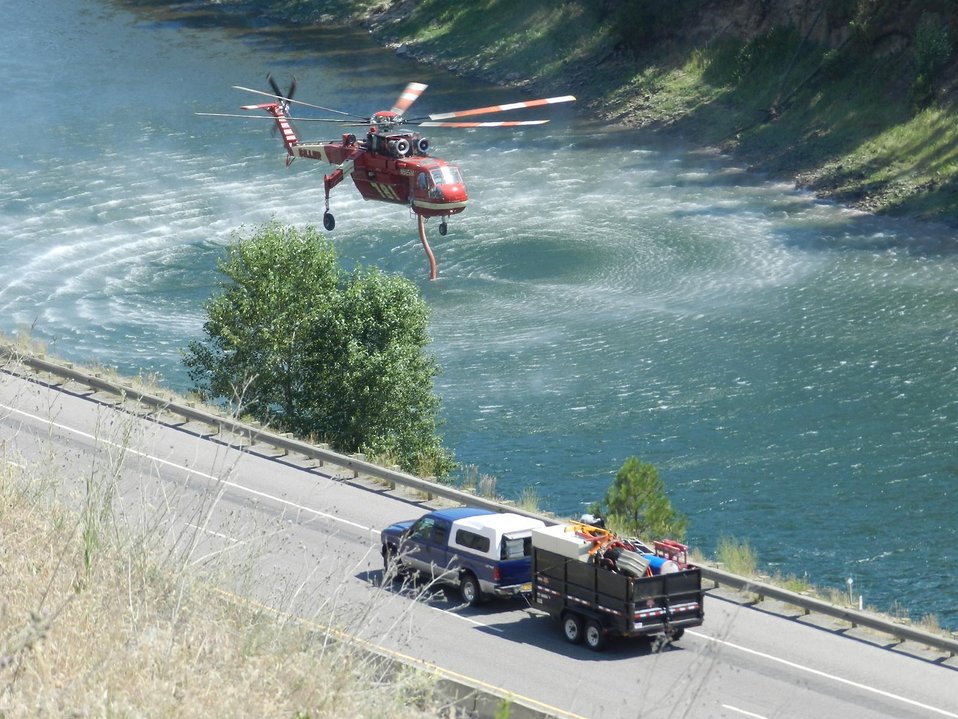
A Type 1 helicopter takes on water at the Clark Fork River to fight the West Mullan Fire in the Lolo National Forest, MT. The West Mullan Fire in the Lolo National Forest in Montana near Superior, MT began on Jul. 14, 2013 was due to human interference and has consumed approximately 6, 090 acres. The West Mullan Fire is approximately 45% contained.